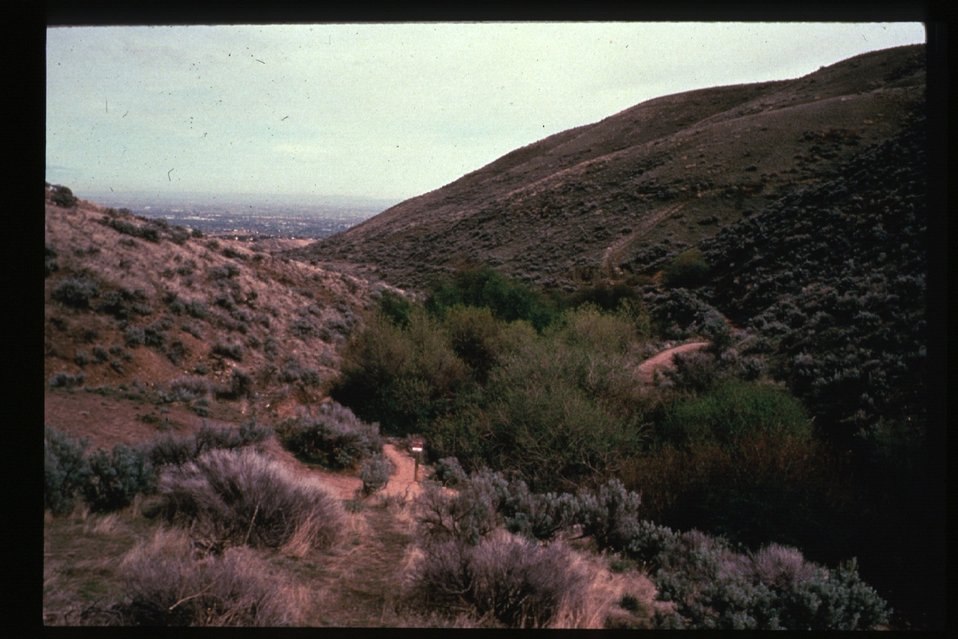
Rangeland Boise Front Hulls Gulch Trails Four Rivers Field Office LSRD Lower Snake River District